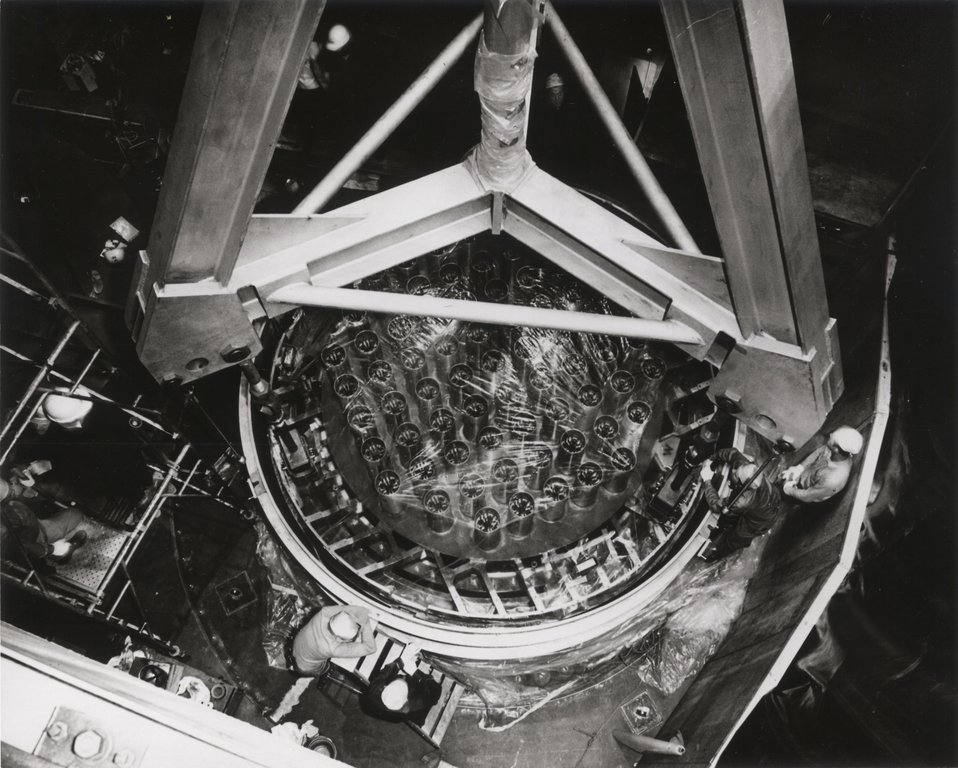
The reactor for Duke Power Company's first nuclear generating unit is its Oconee Nuclear Station near Clemson is being readied for its initial fuel loading later this spring. Circa 1973.